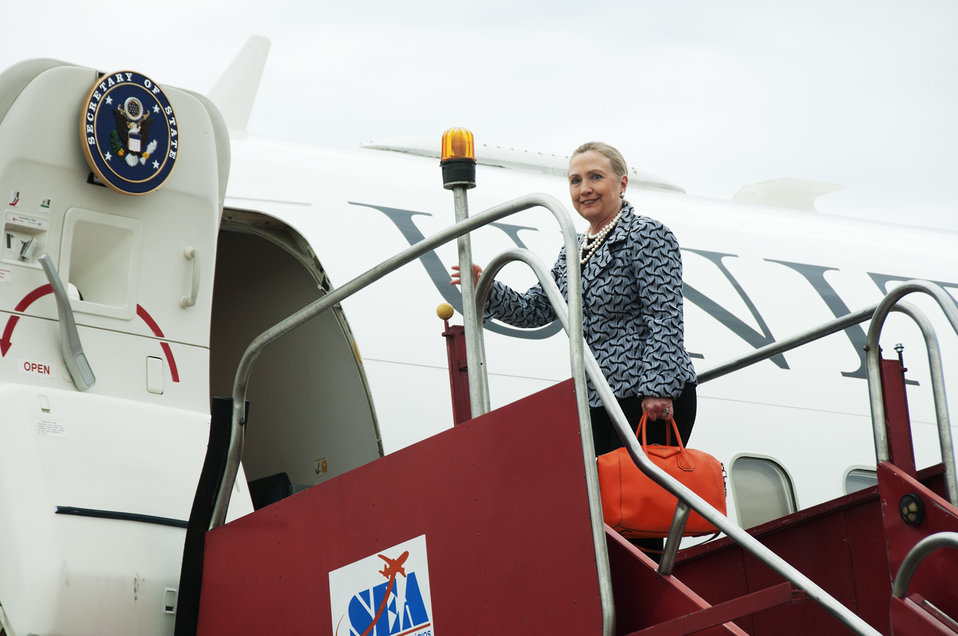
Secretary Clinton Departs Brazil After the Rio 20 Conference

U.S. Secretary of State Hillary Rodham Clinton departs Rio de Janeiro, Brazil after attending the Rio 20 Conference on June 22, 2012.